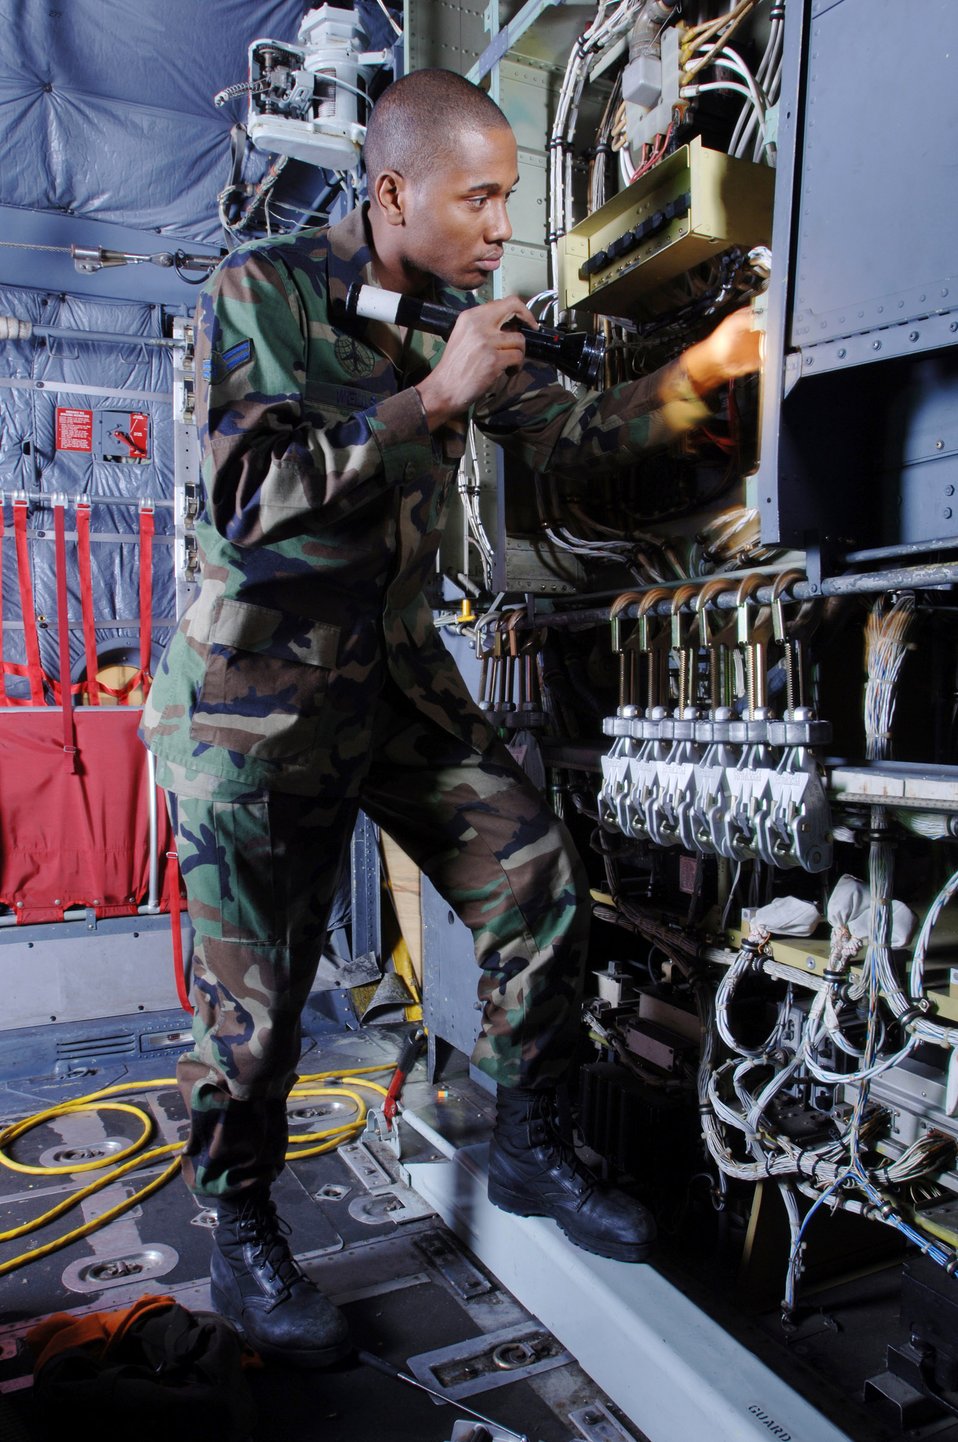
Avionics check

YOKOTA AIR BASE, Japan -- Airman 1st Class Marlon Wells uses a flashlight to visually inspect the avionics system in the cargo bay of a C-130 Hercules aircraft here. Airman Wells is looking for chaffed, frayed and disconnected wires to prevent system failure. He is a C-130 crew chief from the 374th Maintenance Squadron/ isochronal section, here at Yokota Air Base, Japan.